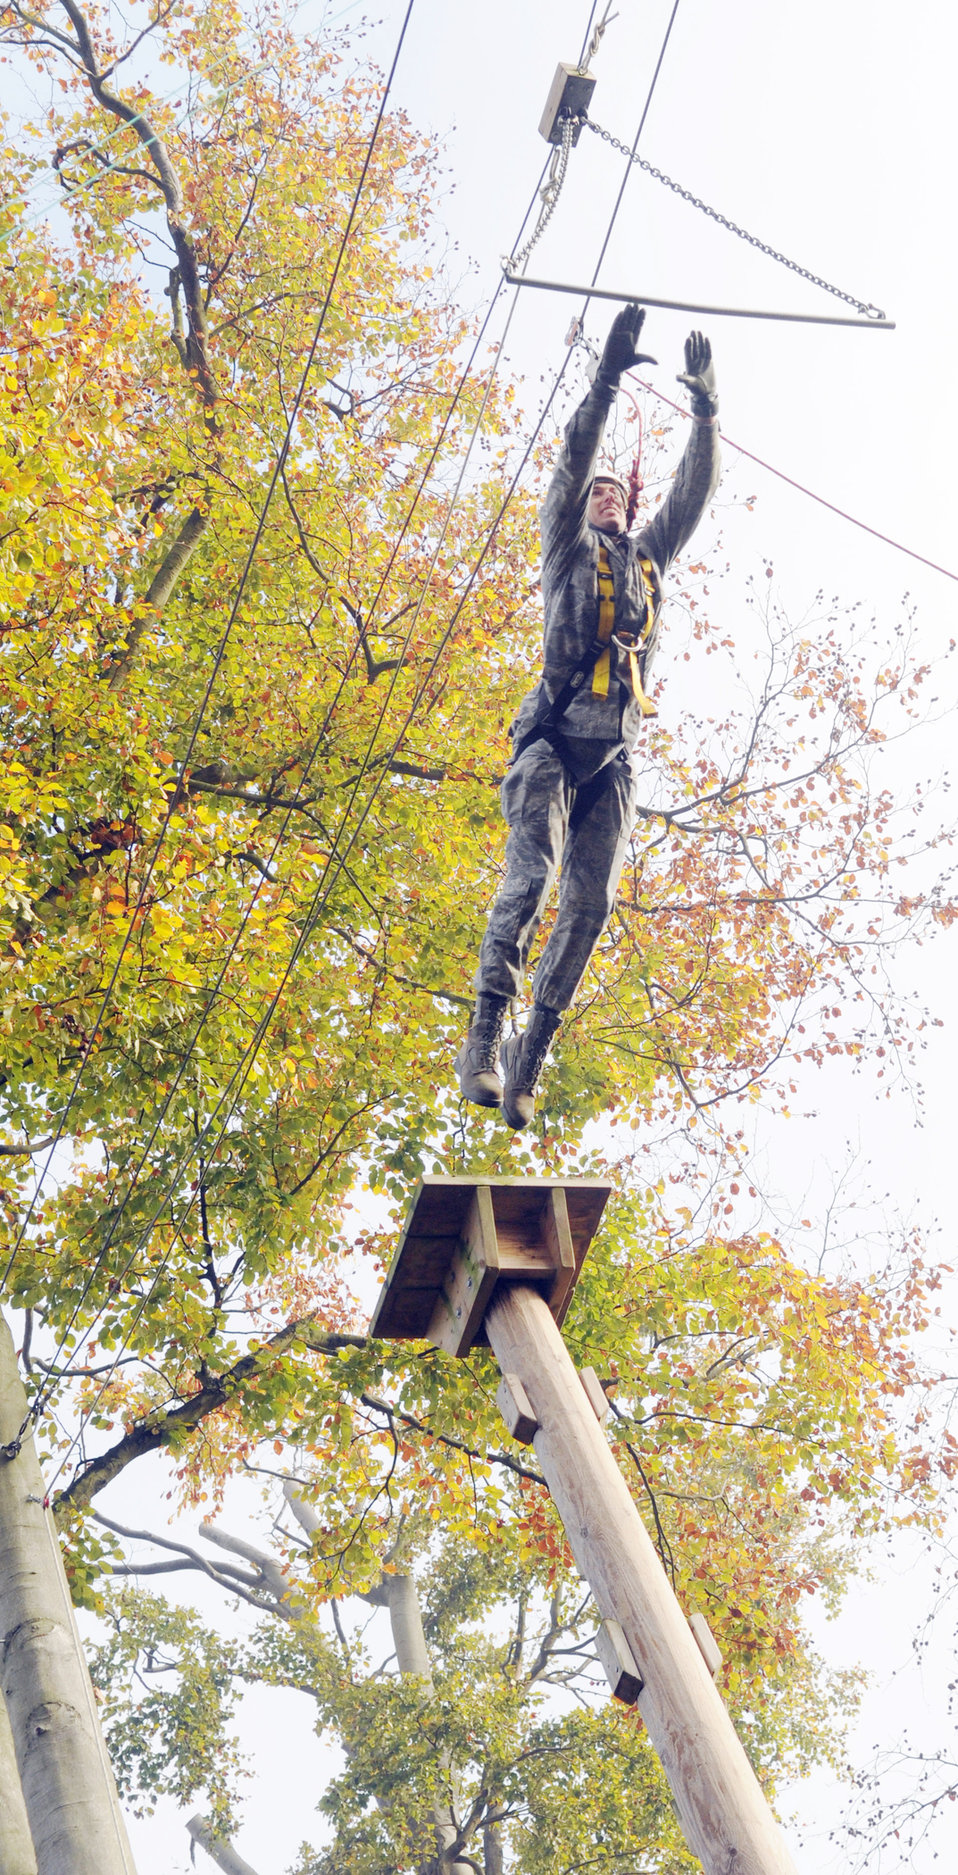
American, British forces join for leadership development

In a leap of faith, 1st Lt. Albert Secrest dives from a 50-foot tall platform to grab a bar on the high-ropes course at Royal Air Force Marham Nov. 9, 2009. This event was one of 40 offered at the camp's Leadership, Ethos and Air Power Day to help build teamwork and leadership skills for American and British Air Forces. Forty Airmen from RAFs Mildenhall and Lakenheath participated in the event. Lieutenant Secrest is from the 48th Equipment Maintenance Squadron.